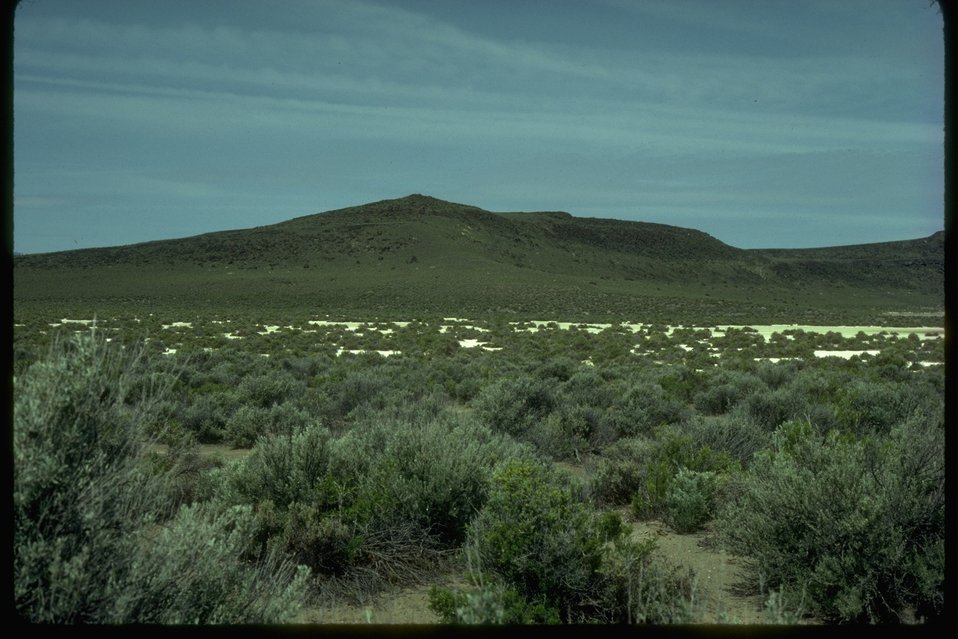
Salt Desert Shrub in high desert in Lake County.